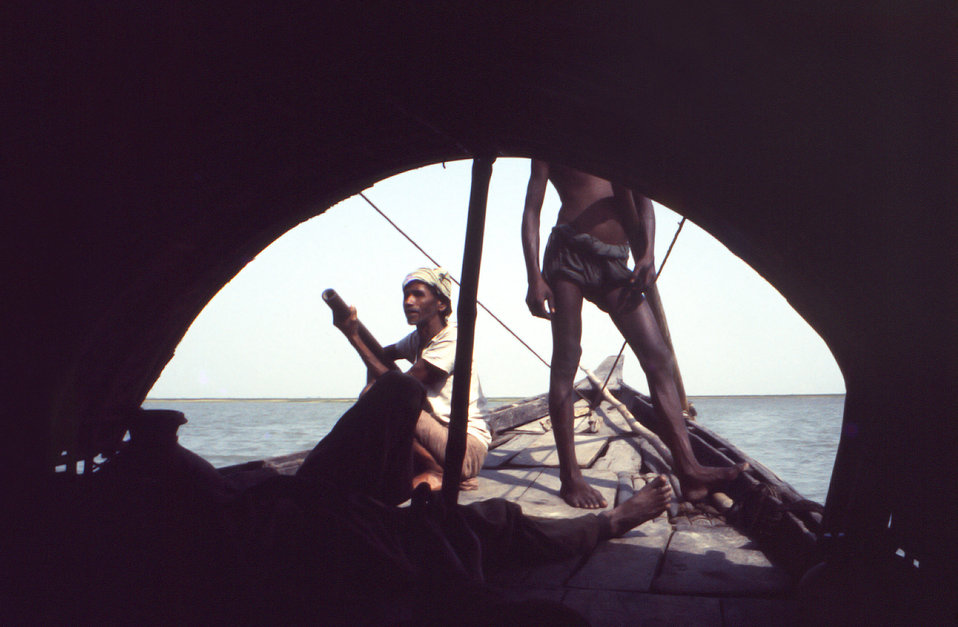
Photographed sometime in the early 1970s, during the worldwide smallpox eradication campaign, this image depicted three men in a boat traveling on an unknown body of water somewhere in the small town of Bangla, which is located in the southern region of Nepal.The Disease